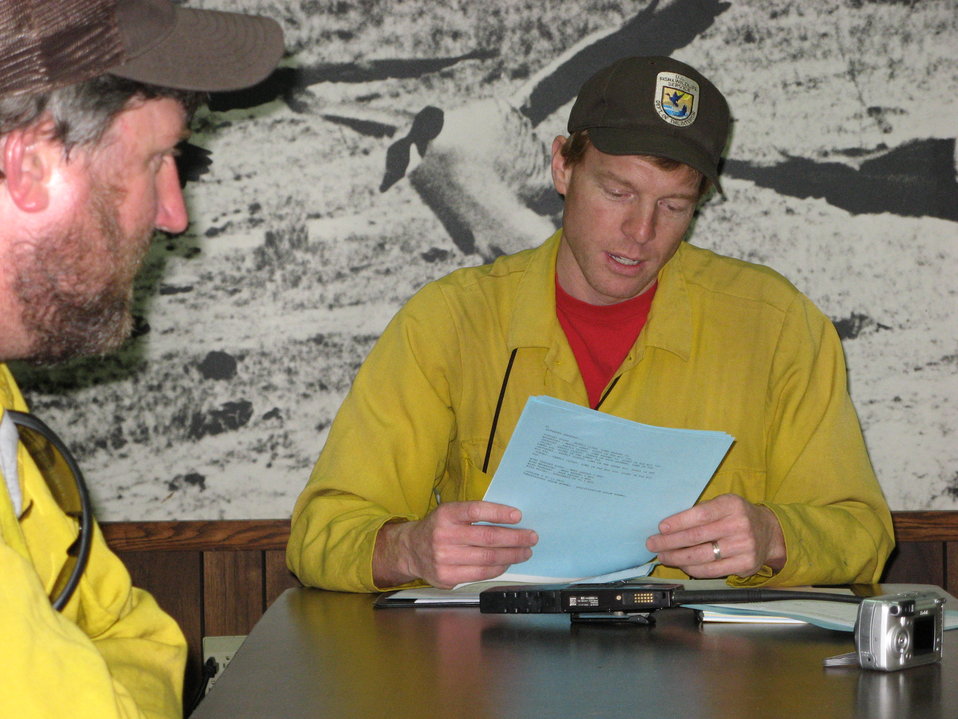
Paul Hess at a controlled burn briefing

Alabama, New York: U.S. Fish and Wildlife Service Biologist Paul Hess of Iroquois National Wildlife Refuge leads a pre-burn briefing for controlled burns in grasslands while Service fire management officer Mike Durfee looks on. The U.S. Fish and Wildlife Service has a cadre of professionally trained wildland firefighters.